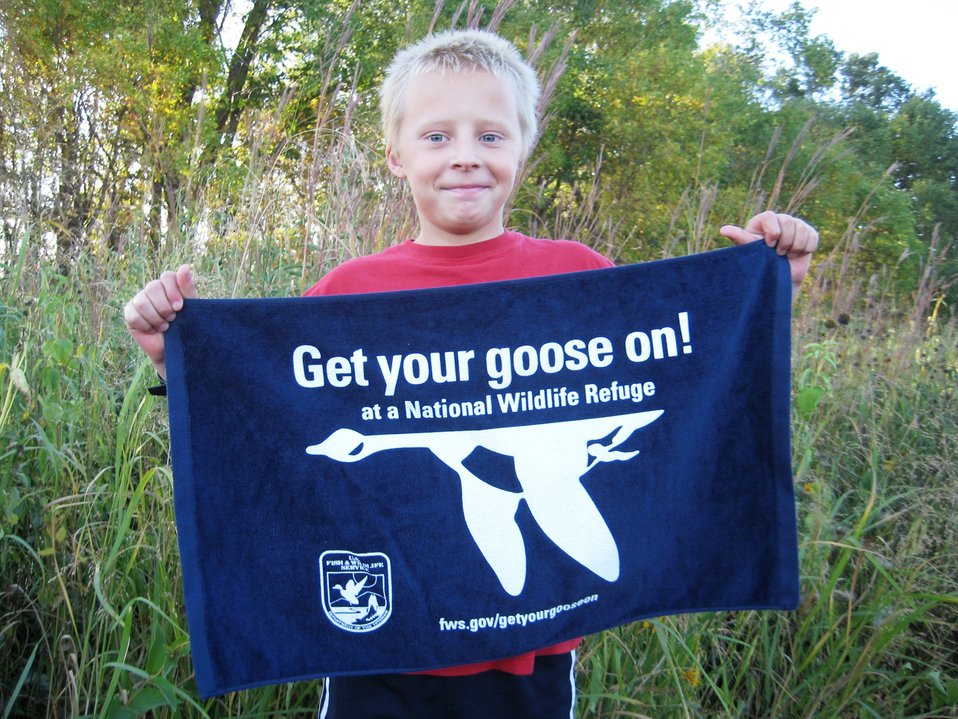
Get Your Goose On!

Taken at Tewaukon National Wildlife Refuge.